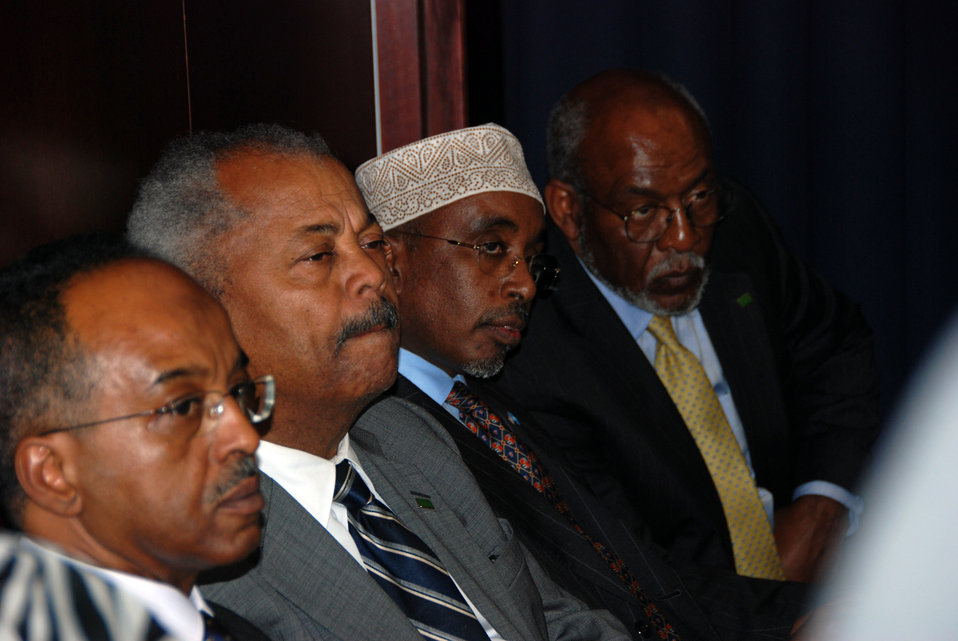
Secretary Clinton and Somali President Press Conference

Members of the audience listen to U.S. Secretary of State Hillary Rodham Clinton during a press conference with the Somali President Sheikh Sharif Ahmed in Nairobi, Kenya August 6, 2009.